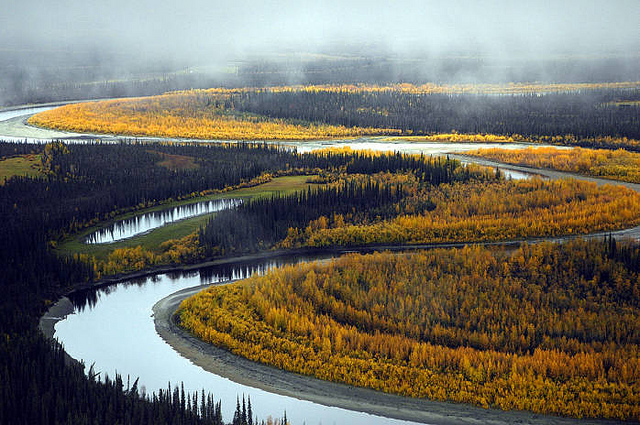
Koyukuk National Wildlife Refuge. AK

South fork of the Koyukuk River